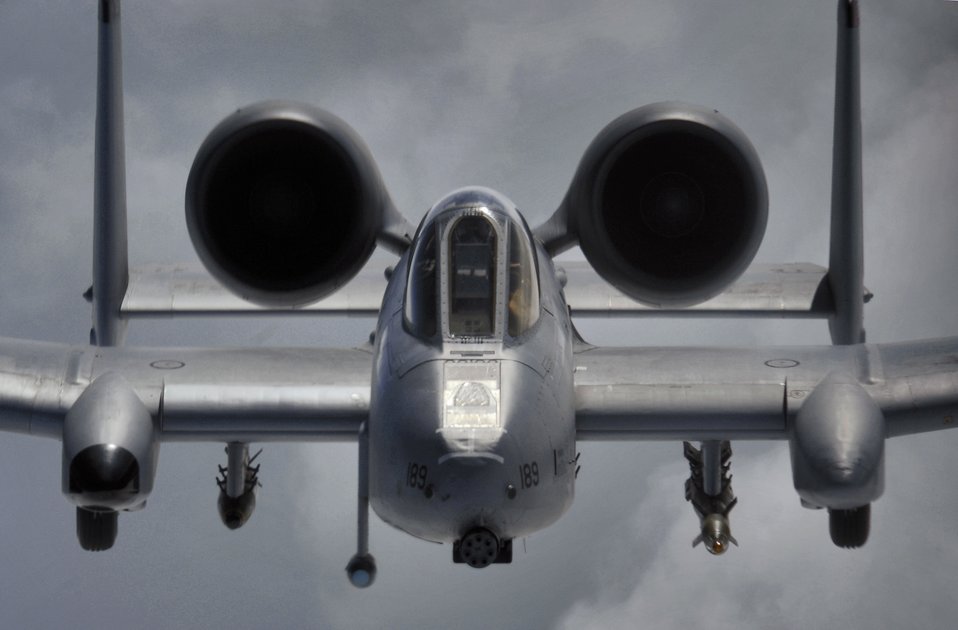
A-10 in position

Capt. Andrew Quinn flies his OA/A-10 Thunderbolt II observation/attack aircraft to a refueling position behind a KC-135 Stratotanker over Afghanistan on Sunday, March 26, 2006. Captain Quinn is deployed to the 355th Expeditionary Fighter Squadron at Bagram Air Base, Afghanistan.